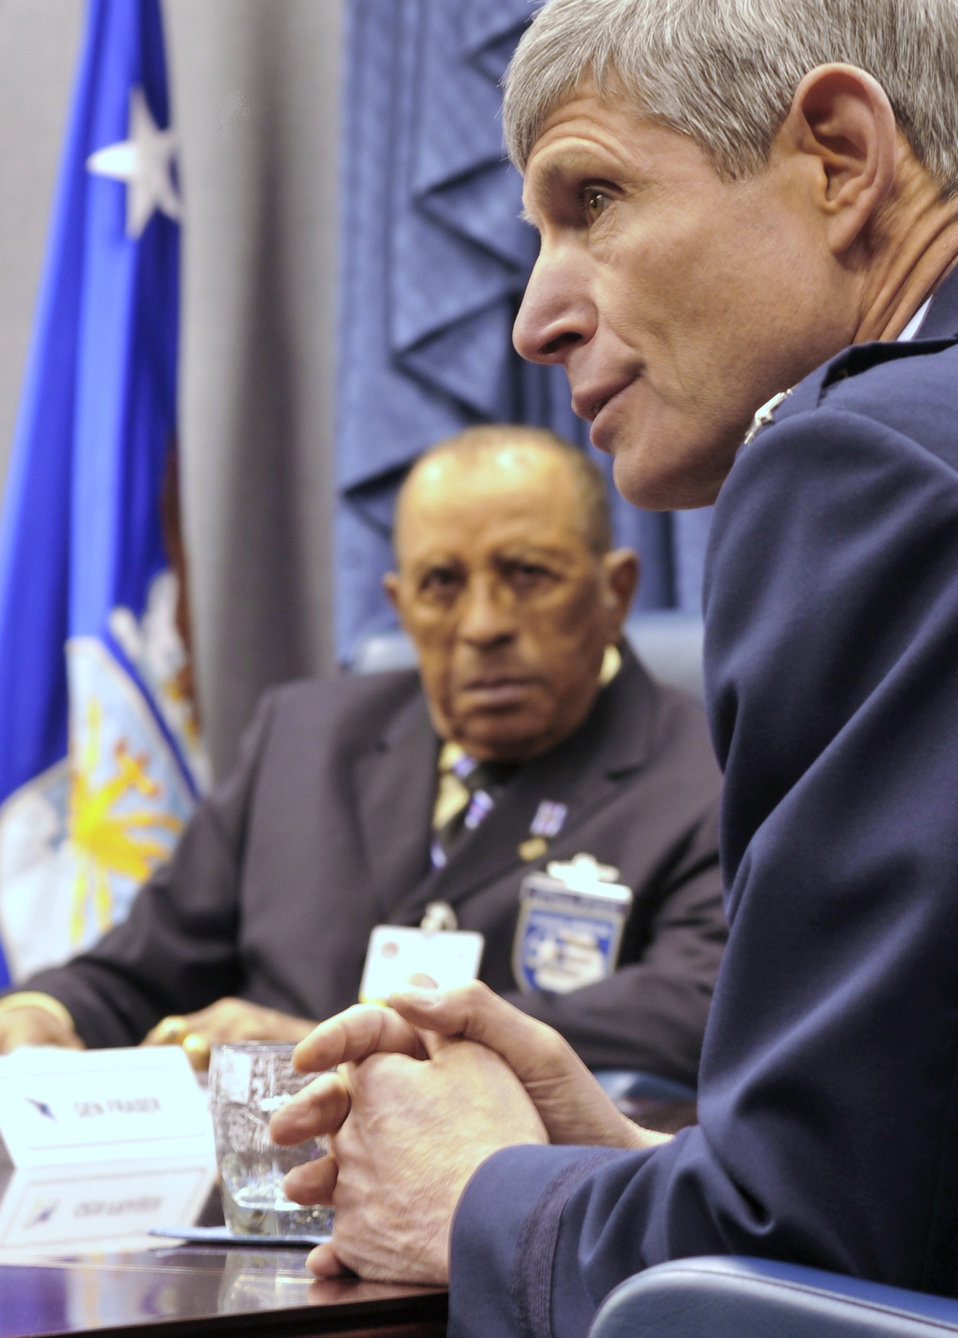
Tuskegee Airmen visit Pentagon

Air Force Chief of Staff Gen. Norton Schwartz (right) talks with Tuskegee Airmen including James C. Warren in the Pentagon April 20. Four Tuskegee Airmen and retired Lt. Gen. Russell Davis were in Washington to meet with General Schwartz and Air Force Vice Chief of Staff Gen. William Fraser III prior to departing on a tour of units in Southwest Asia including the 332nd Air Expeditionary Wing whose origins trace back to the 332nd Fighter Group and the Tuskegee Red Tail Flyers.